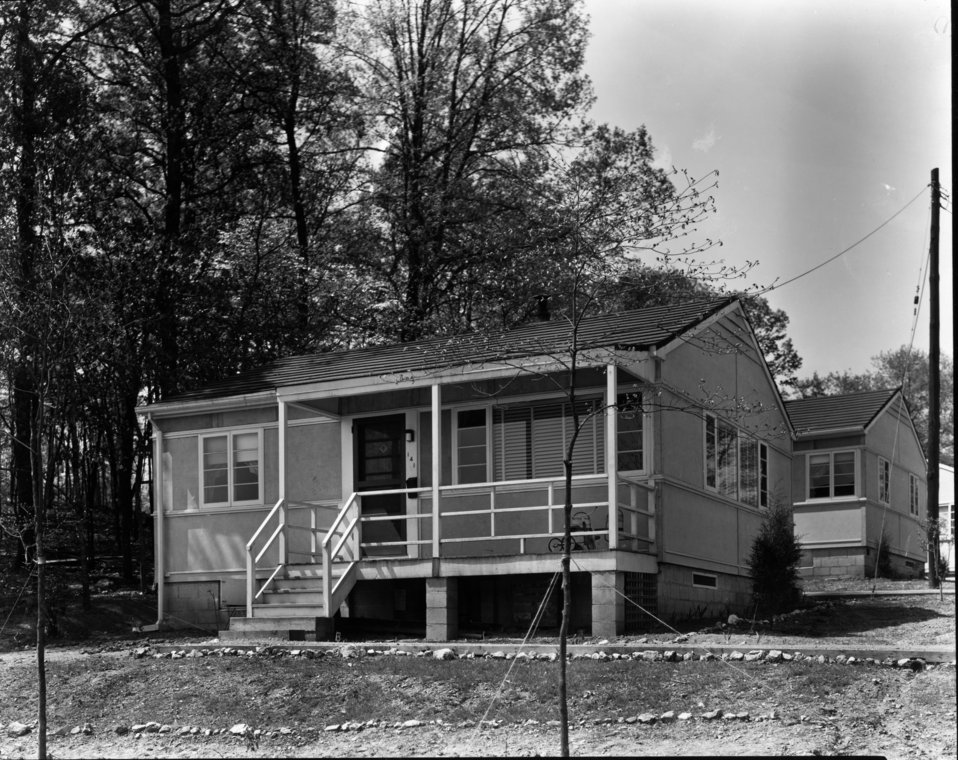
Housing at Oak Ridge